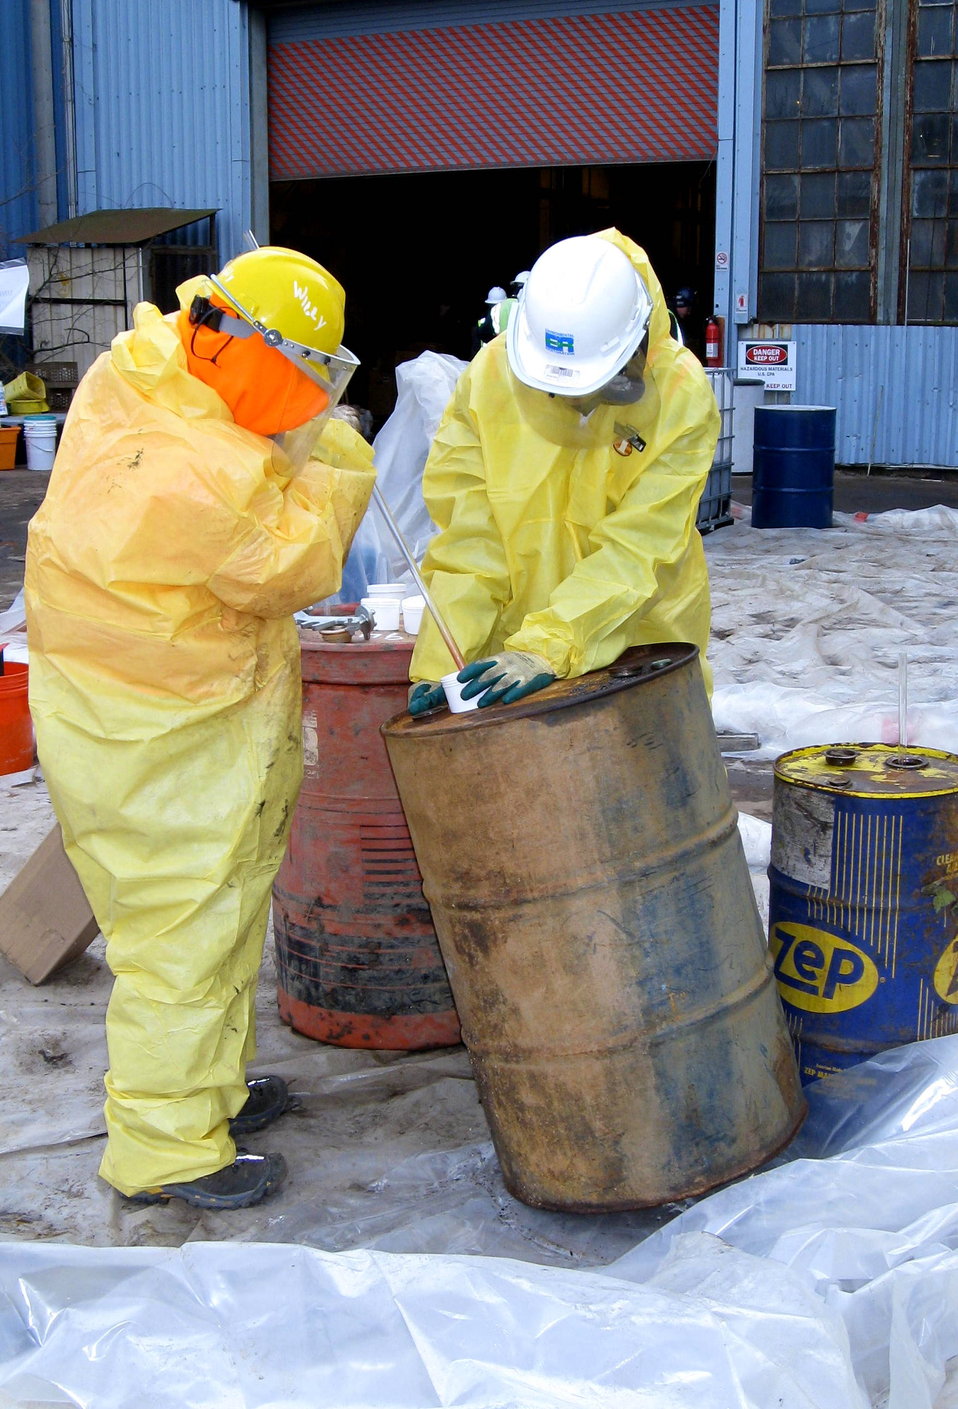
December 2, 2012 - Carefully working with drums of unknown liquids at the Staten Island Collection Area, Fresh Kills Landfill

EPA teams have been collecting household hazardous waste across all five boroughs of New York and Long Island.